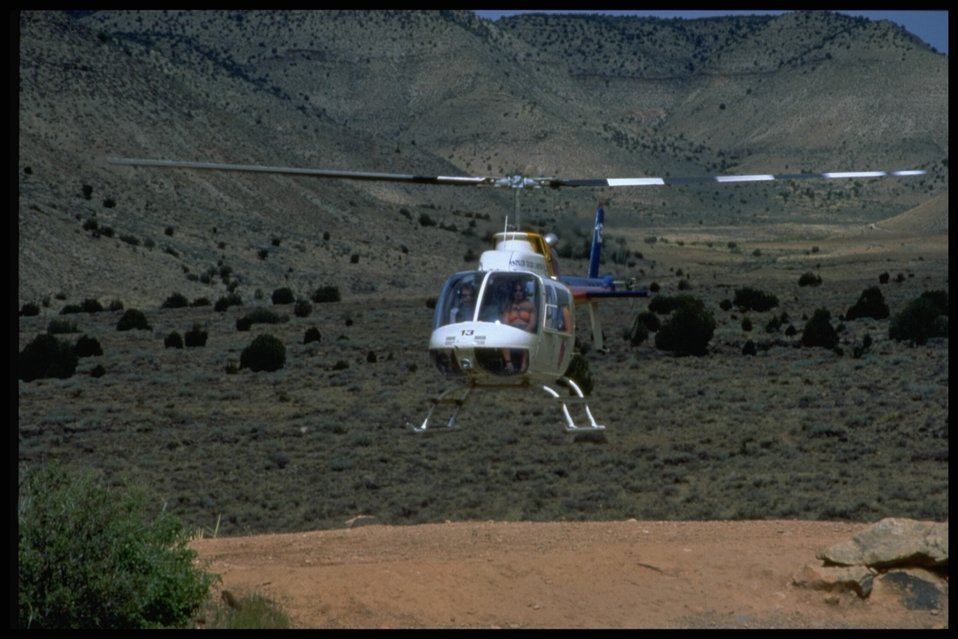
A helicopter hovers over the landing area.